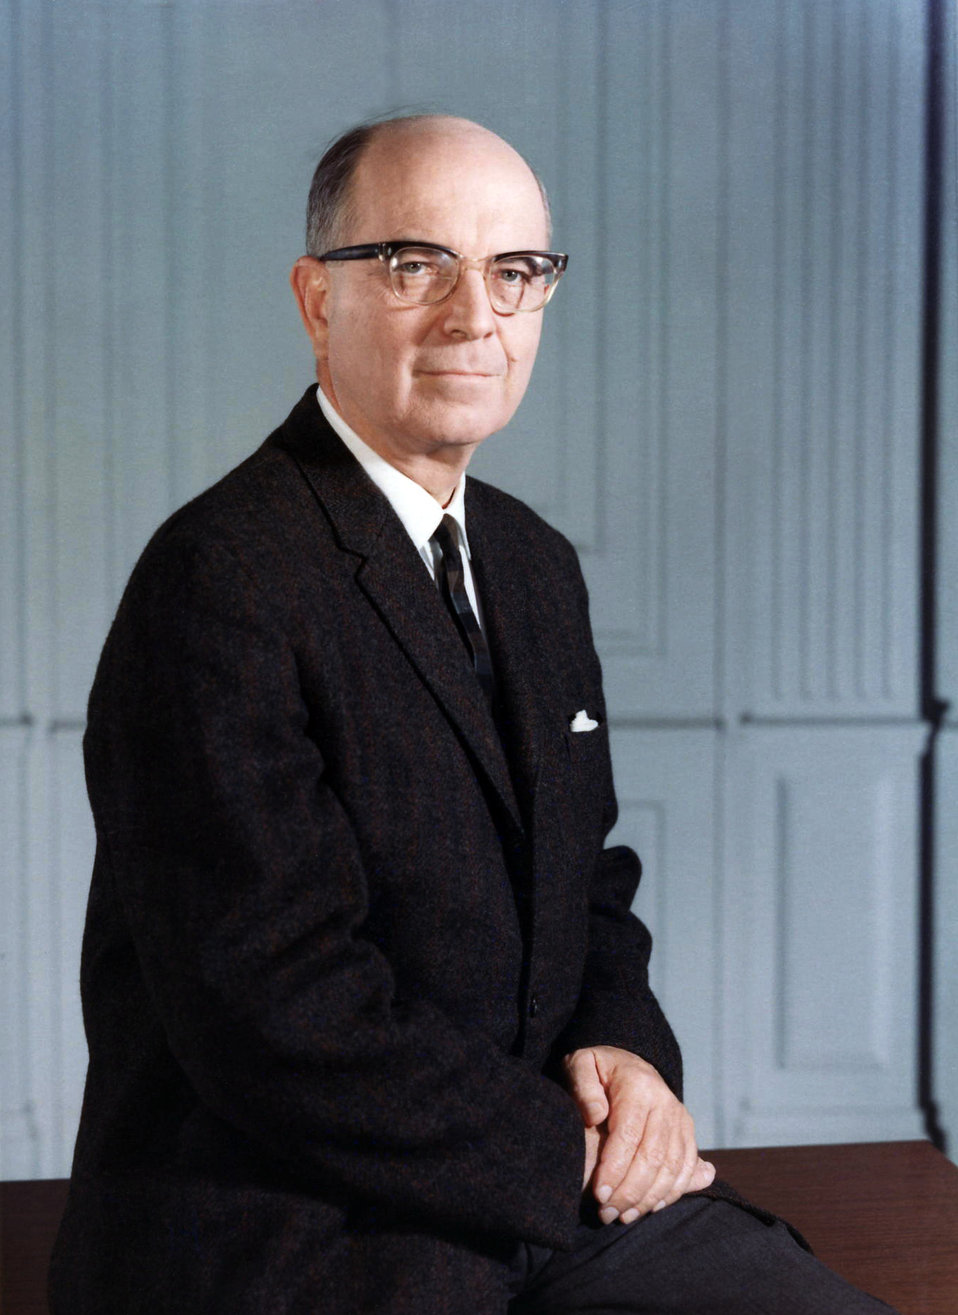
This was a photographic portrait of Dr. Alexander D. Langmuir (1910 - 1993). Dr. Langmuir was chief epidemiologist at the Centers for Disease Control and Prevention for two decades.